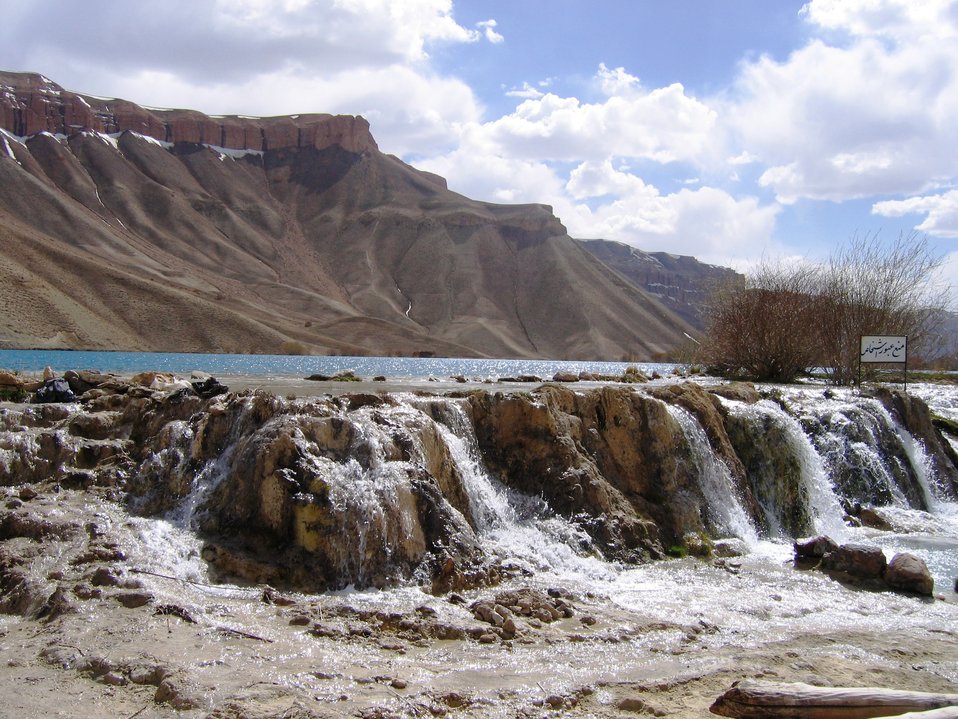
bamiyan band-e-emir

The beauty of the area’s six cobalt-blue Band-e-Amir lakes always stuns visitors to central Bamyan province. Natural travertine dams, created by calcium deposits over many years, support the lakes. They stretch across the valley in long graceful arcs, and merge into a strikingly beautiful landscape of stone, desert, and water. The vistas rival those of national parks anywhere in the world.
USAID, through its implementing partner the Wildlife Conservation Society (“WCS”), has been working since 2006 to develop the institutions and foster the consensus needed for the formation of a national park in the lakes area. The efforts ultimately resulted in the Earth Day declaration in 2009, of Band-e-Amir as Afghanistan’s first national park by the Director General of Afghanistan’s National Environmental Protection Agency (NEPA).
Afghanistan’s Environment Law requires local management of protected areas. To fulfill that mandate, WCS initially educated the residents in the 13 villages located within the territory of the park about the economic opportunities that national park status would provide. The Band-e-Amir Protected Area Committee (BAPAC) recruited villagers to be members. BAPAC and WCS jointly prepared a management plan for the park, and WCS assisted local officials in successfully navigating the national park proposal process.
With USAID support, WCS is now training rangers to protect the flora and fauna in the park, and is educating the provincial and national government officials who must manage park operations and ensure sustainability. WCS continues to help the government develop laws and policies on protected areas and species, and community-based natural resource management.
In anticipation of national park status, local entrepreneurs had already begun building small shops, restaurants, and hotels to serve tourists. USAID-funded partners provided guidance to help them place these structures away from the most ecologically sensitive areas. Now that the park has achieved official status and protection, the local people will have the opportunity to protect, preserve, and profit from this beautiful landscape.